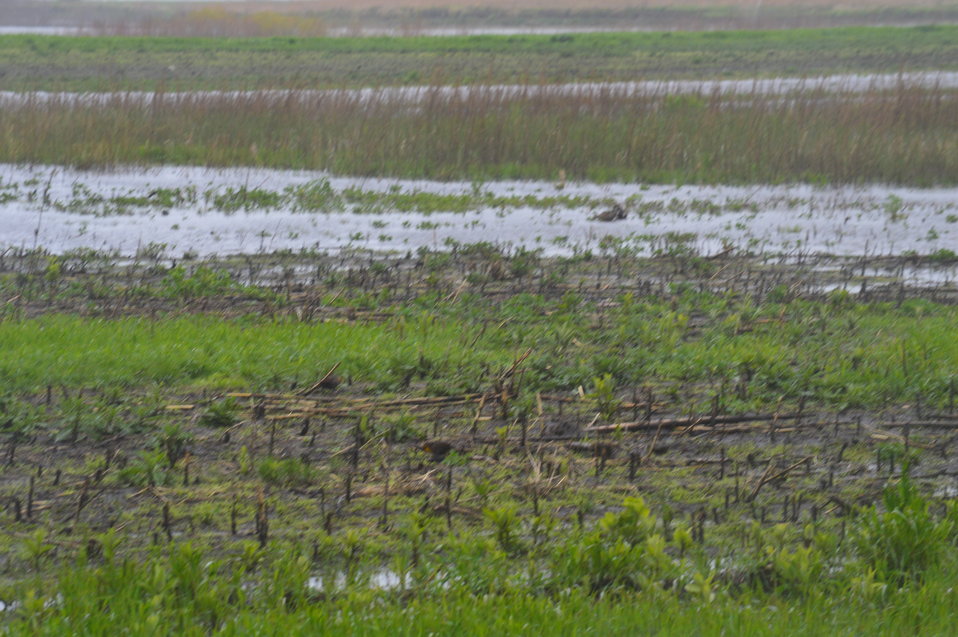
Waterfowl in wetlands

Scenery and wildlife and Audubon National Wildlife Refuge in North Dakota.